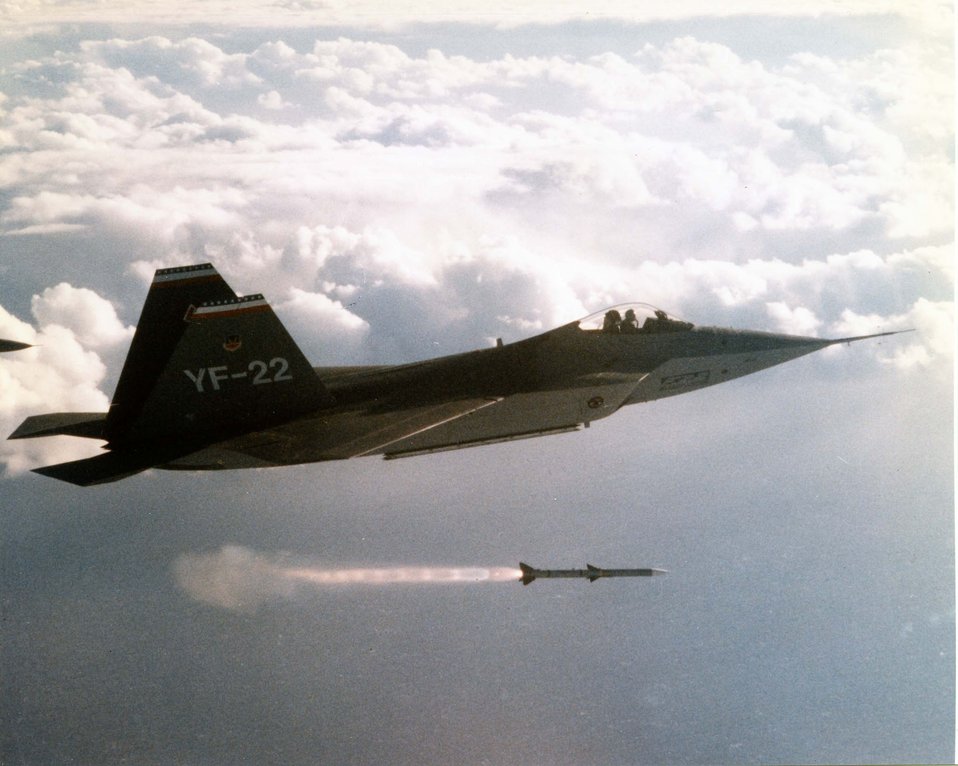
YF-22 Advanced Technology Fighter fires a missile

The YF-22 Advanced Technology Fighter fires a missile in flight over the Pacific Ocean.